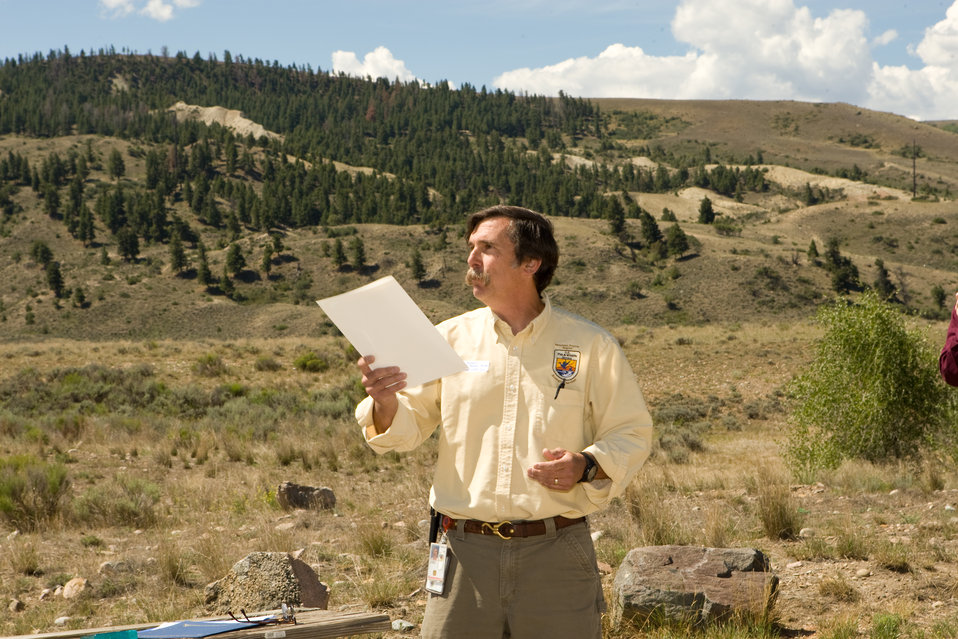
Colorado Rare Plant Conservation Initiative

The Colorado Rare Plant Conservation Initiative (RPCI) is a partnership of 23 statewide and regional agencies, private organizations, and academic institutions working to conserve 121 rare plants in Colorado. As part of these efforts the group developed the Colorado Rare Plant Conservation Strategy, developed Best Management Practices to reduce energy development impacts, addressed climate change, and developed focused strategies for the conservation of individual species at eight priority landscapes. The group has also worked to coordinate volunteer efforts for plant conservation across the state.